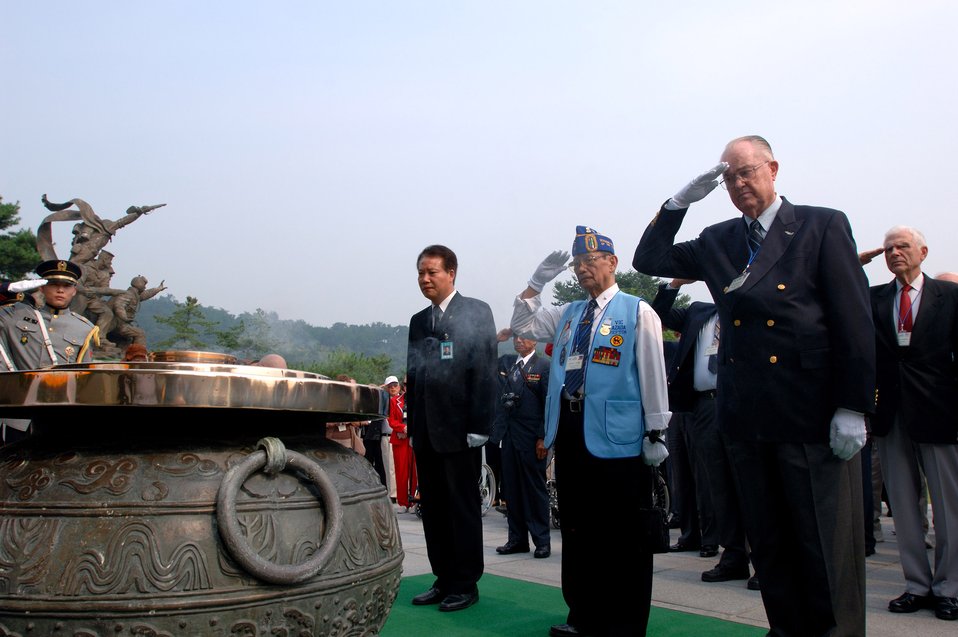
Korean War veterans give sage advice to Airmen

Retired Maj. Gen. Carl G. Schneider (right) and retired Philippines Gen. Vic Azada (Center) salute to honor the lost men and women of the Korean War after a wreath-laying ceremony at the South Korean National Cemetery attended by more than 200 war veterans and family members Sept. 12. The South Korean government's Revisit Korea program invites war veterans each year to come to South Korea to honor the men and woman from 21 countries who served during the Korean War. Nearly 25,000 veterans have participated in this program since 1975.